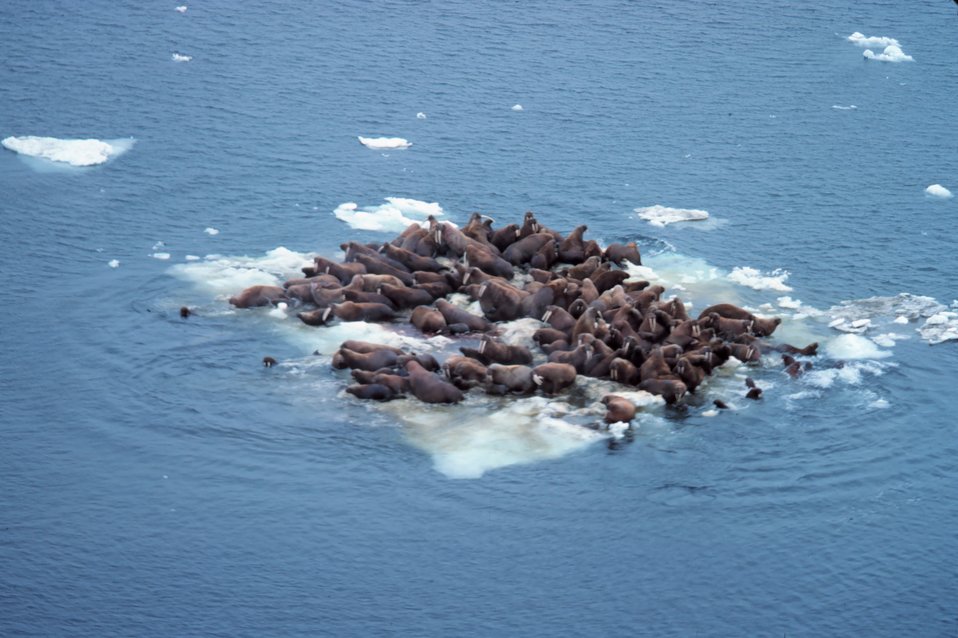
Walrus - Odobenus rosmarus divergens - hauled out on Bering Sea ice.